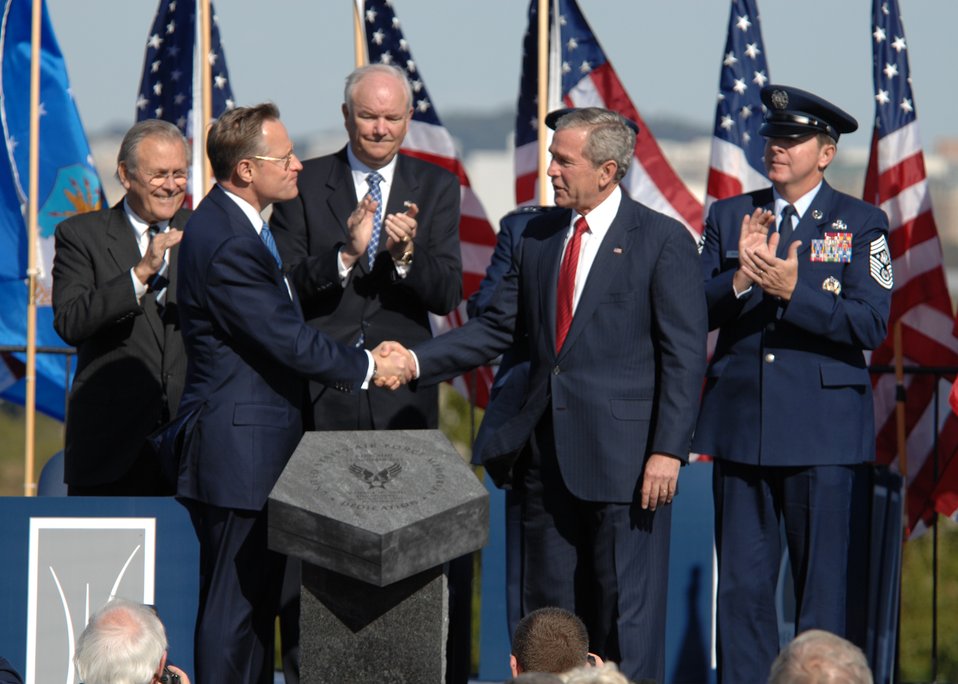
President accepts Air Force Memorial

On behalf of all American citizens President George W. Bush accepts the Air Force Memorial from Air Force Memorial Foundation Chairman Ross Perot Jr. during a dedication ceremony at its Arlington, Va. location overlooking the Pentagon on Saturday, Oct. 14, 2006. Looking on are, from left: Secretary of Defense Donald Rumsfeld, Secretary of the Air Force Michael W. Wynne, Air Force Chief of Staff Gen. T. Michael Moseley and Chief Master Sgt. of the Air Force Rodney J. McKinley. Designed by the late James Ingo Freed the memorial with its three soaring spires inspired by the U.S. Air Force Thunderbirds bomb burst manuever, pays tribute to and honors the patriotic men and women of the U.S. Air Force and its predeccessor organizations. An open house will run near the Pentagon in conjunction with the dedication ceremony which will feature performances by the U.S. Air Force Band, the U.S. Air Force Honor Guard drill team, and will culminate with a concert featuring country music performer LeeAnn Womack.